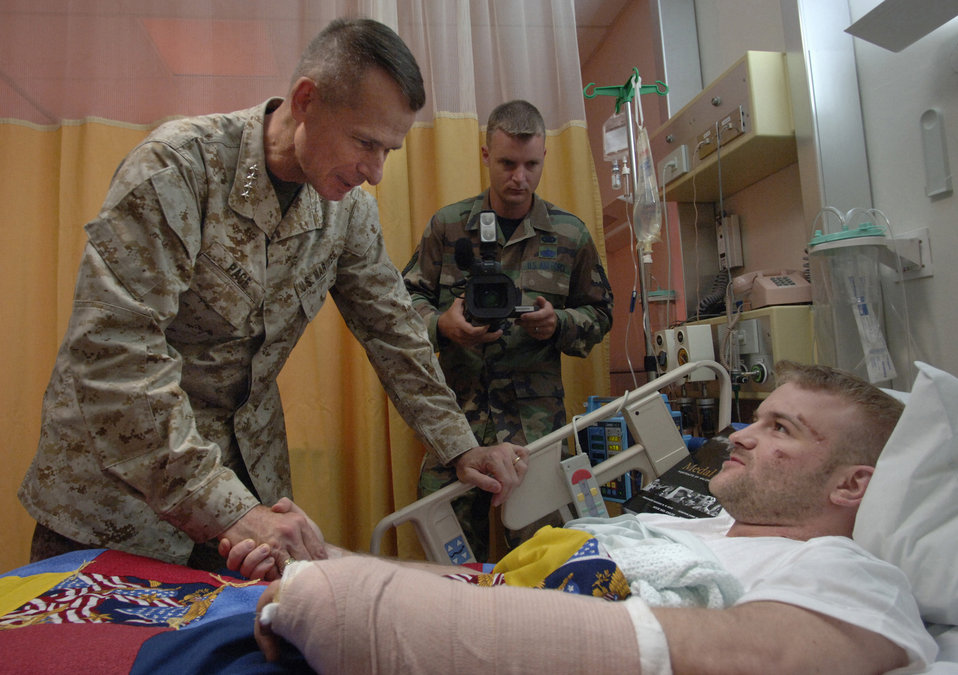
Purple Heart presentation

Army Spc. Colin Laird Pearcy receives an unexpected visit from Chairman of the Joint Chiefs of Staff Gen. Peter Pace at Landstuhl Regional Medical Center in Germany July 21. The 24-year-old specialist from Rocken, Ill., is assigned to Bravo Company, 2nd Battalion, 325th Infantry Regiment, 82nd Airborne Division. He is at the medical center being treated for injuries he received while in Iraq. The specialist was also presented the Purple Heart by General Pace and Senior Enlisted Advisor to the Chairman of the Joint Chiefs of Staff Army Sgt. Maj. William J. Gainey.